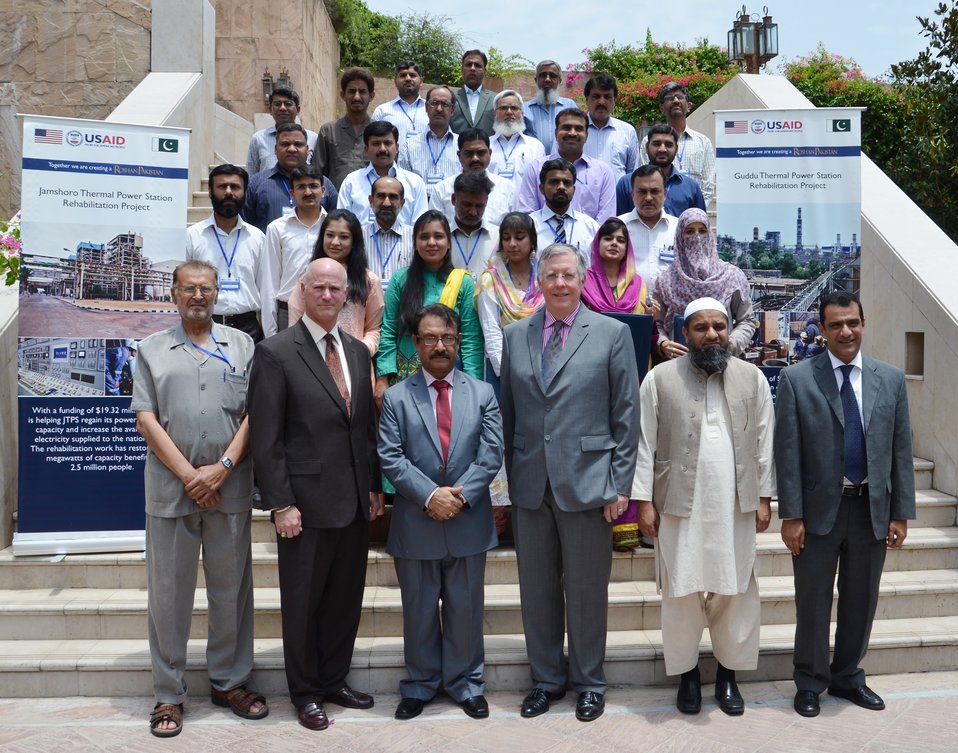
U.S. TRAINING IMPROVES POWER PLANT ENGINEERS’ EFFICIENC

Group photo of Deputy Director of USAID’s Energy Office Tim Moore with twenty Pakistani engineers, from power generation companies.